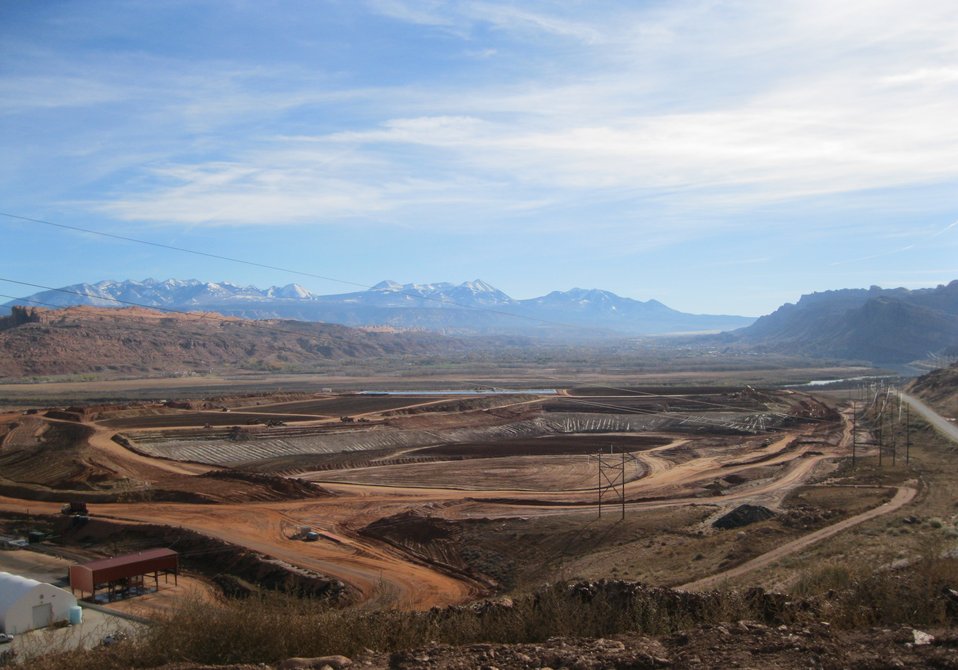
Moab Project Disposes 2 Million Tons of Uranium Mill Tailings with Recovery Act Funds

The uranium mill tailings pile excavation is being partially funded by the American Recovery and Reinvestment Act.

The Moab Uranium Mill Tailings Remedial Action
Project reached its primary American Recovery and Reinvestment Act milestone ahead of schedule during February 2011 with the disposal of 2 million tons of uranium mill tailings.